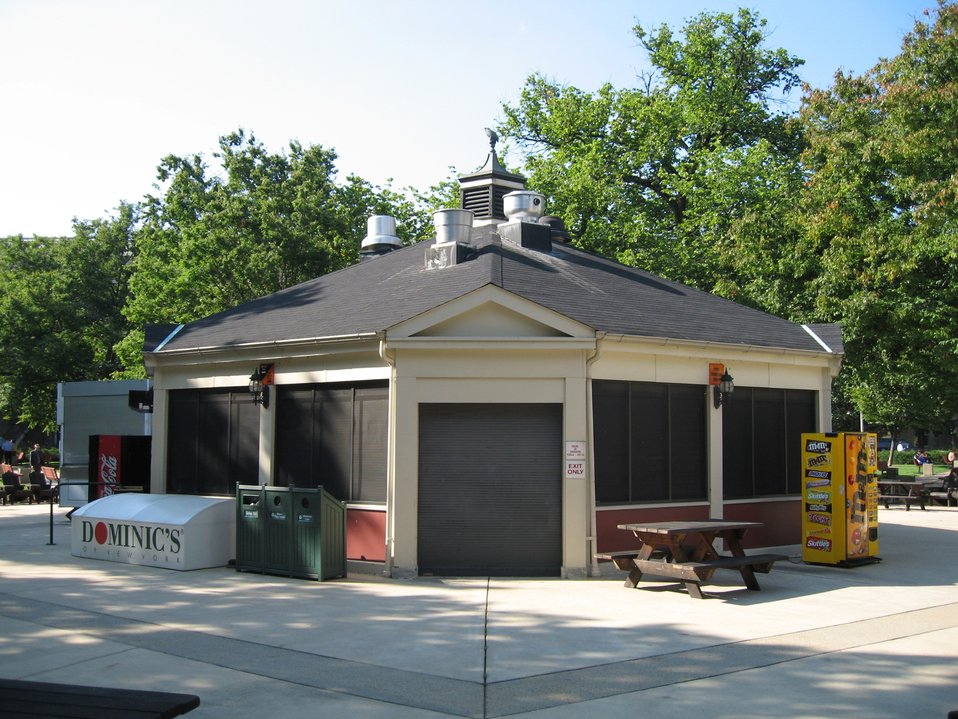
Pentagon Cold War Legend to be Torn Down

The hot dog stand in the Pentagon's center courtyard, which has long been a source of Cold War speculation, folklore and legend, will be torn down in the coming months. During the Cold War, the Soviets reportedly thought the hot dog stand led to a secret underground bunker.